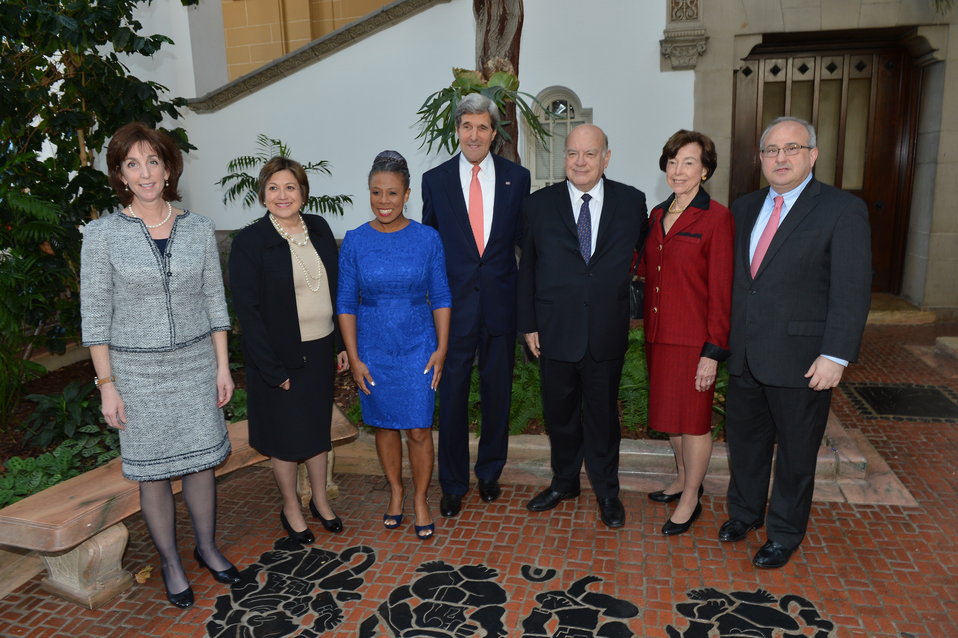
Secretary Kerry and Assistant Secretary Jacobson With OAS and Inter-American Dialogue Officials

U.S. Secretary of State John Kerry and Assistant Secretary for Western Hemisphere Affairs Roberta Jacobson, left, pose for a photo with Secretary General of the Organization of American States (OAS) José Miguel Insulza, right of the Secretary, Co-Chair of the Inter-American Dialogue, Carla Hills, second from right, President of the Inter-American Dialogue Michael Shifter, far right, and others, before Secretary Kerry delivers remarks on U.S. Policy in the Western Hemisphere at the OAS in Washington, D.C., on November 18, 2013.